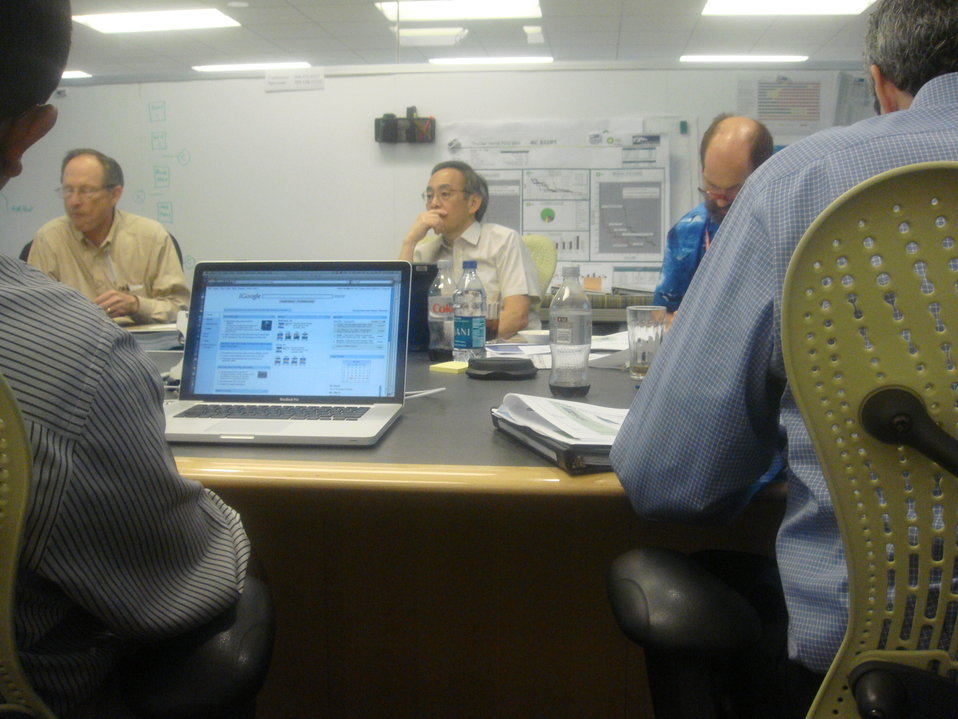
chu2

Energy Secretary Steven Chu consults with scientists and BP officials in Houston on May 25, reviewing BP's plans for stopping the oil spill and providing scientific advice on how to maximize chances of success